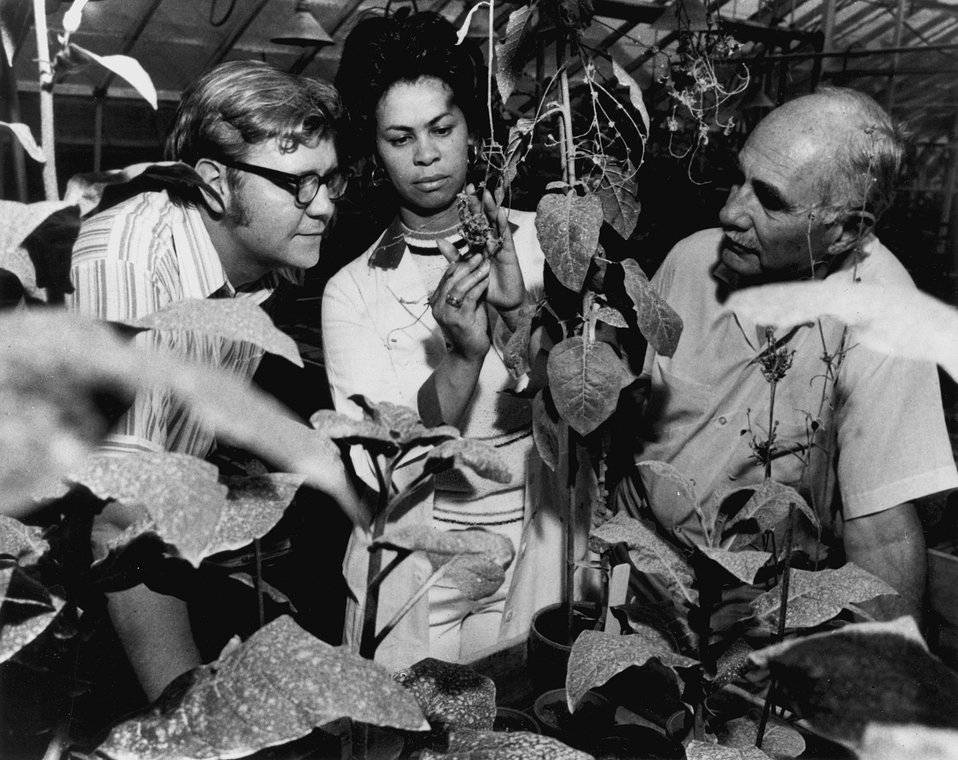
Scientists examine a hybrid tobacco plant created by a new technique which bypasses the natural restraints on cross breeding of different species. The Technique is called parasexual hybridization. The scientists are left to right: research biologists Dr. Peter S. Carlson, Rosemarie D. Dearing, and Dr. Harold H. Smith. c. 1972